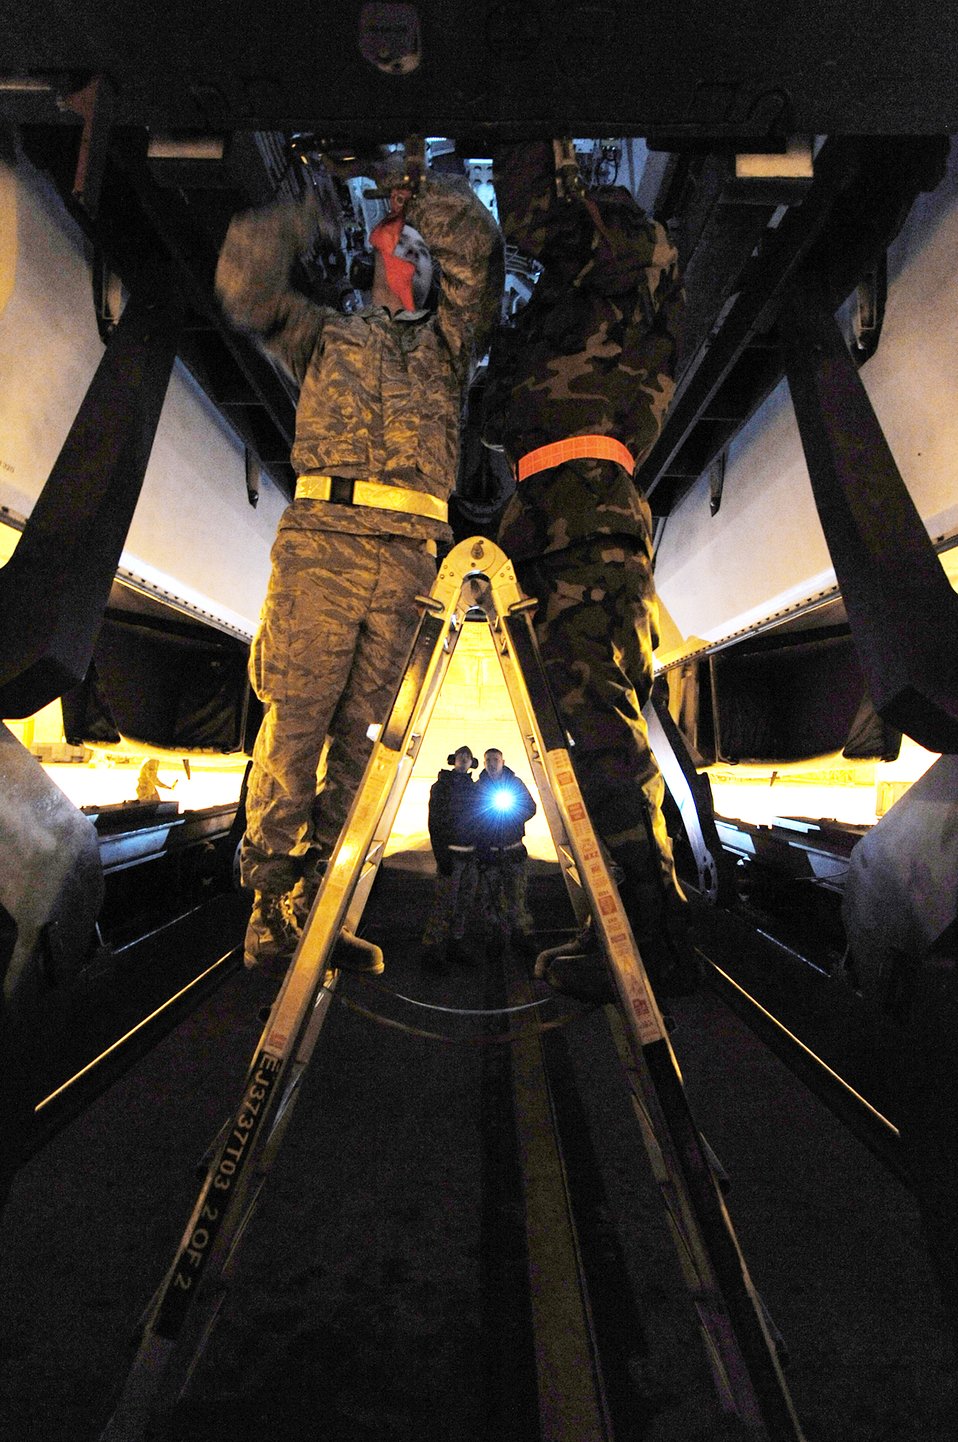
Turn it to the right

Weapons load crew members from the 28th Maintenance Squadron perform maintenance on a B-1B Lancer's bomb bay, Nov. 4. 2009, at Ellsworth Air Force Base, S.D.